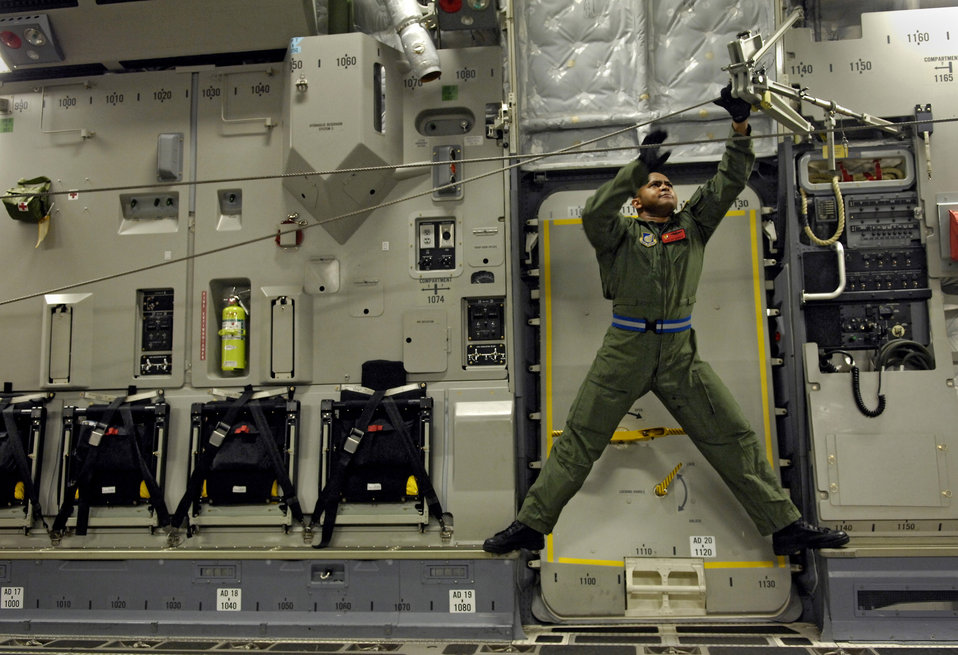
Hook up

Tech. Sgt. Ike Murray hooks up a static line on his C-17 Globemaster III in preparation for a personnel airdrop mission Feb. 11, at Hickam Air Force Base, Hawaii. Sgt. Murray is a loadmaster from the 535th Airlift Squadron.